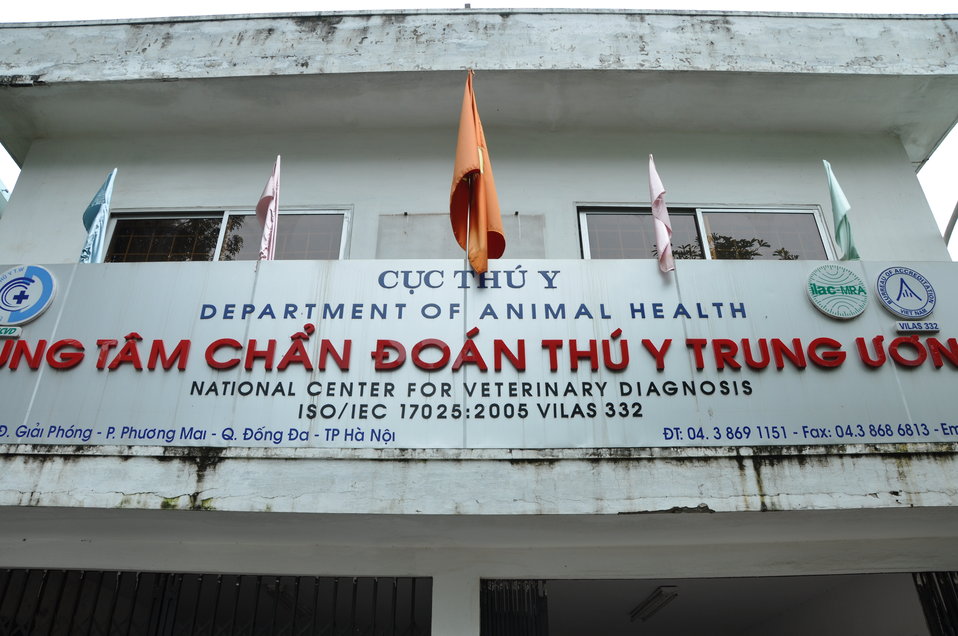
Sign of Vietnam Department of Animal Health, Hanoi